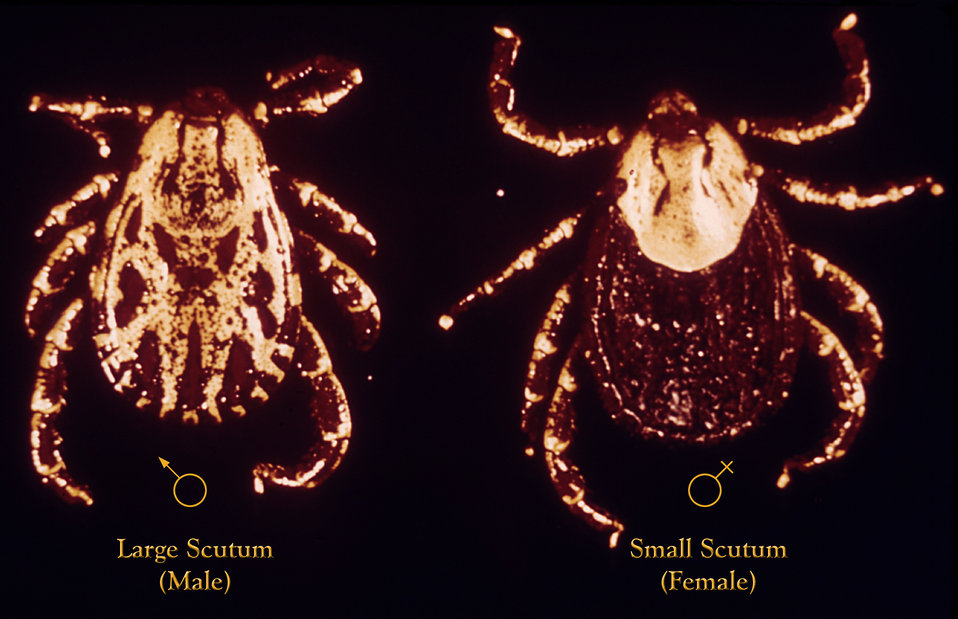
These are two Ixodidae 'American dog ticks', Dermacentor variabilis, male is on the left, female is on the right.